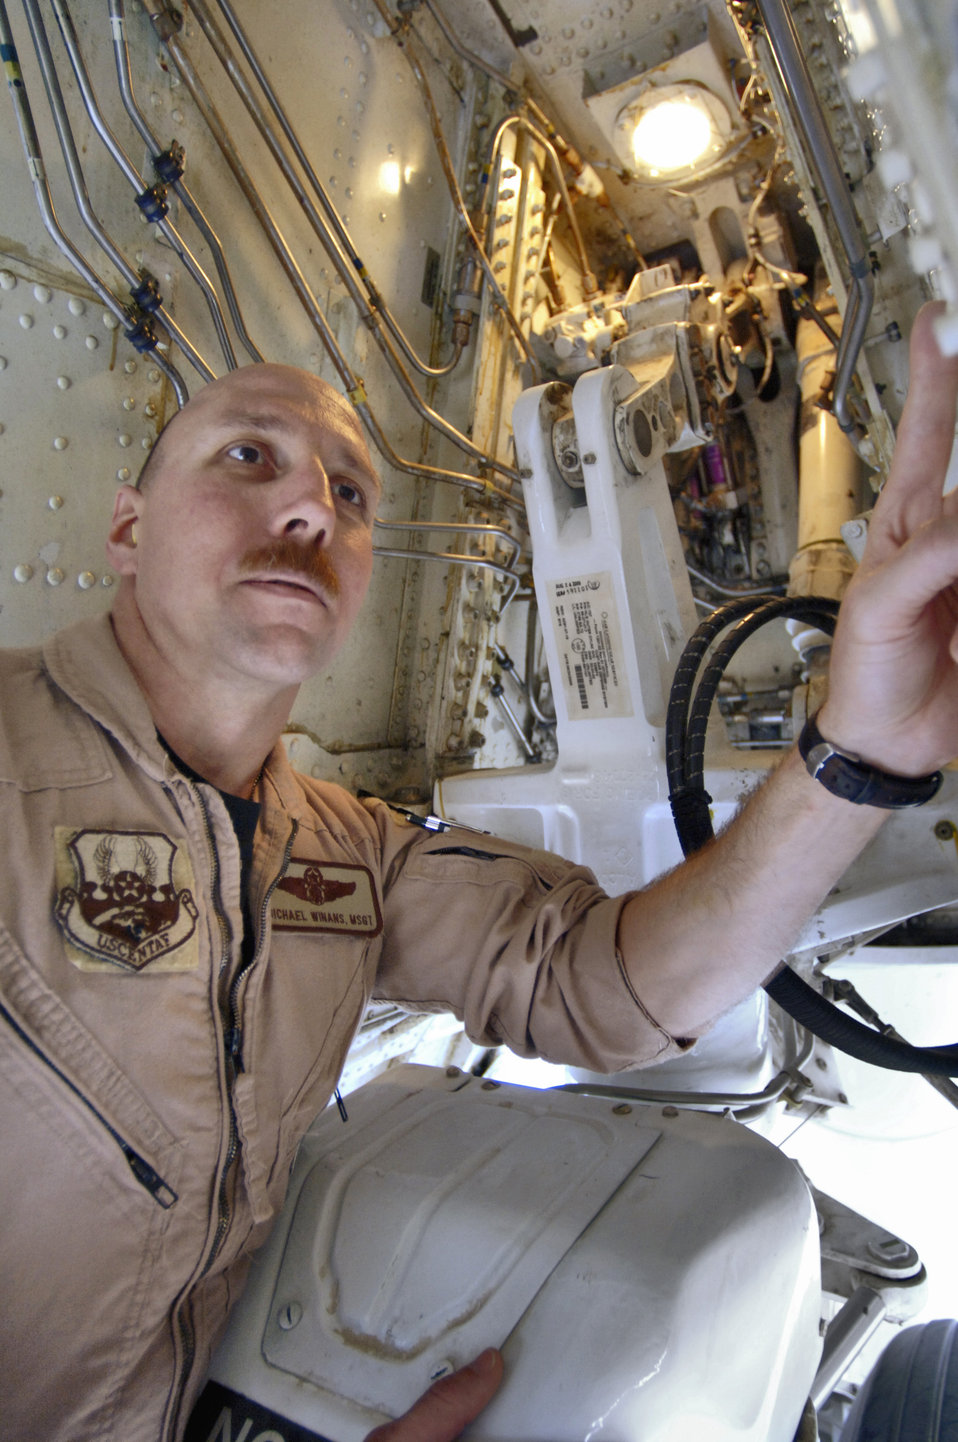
Joint STARS

SOUTHWEST ASIA (AFPN) -- Master Sgt. Michael Winans checks the nose gear wheel bearing cap during his pre-flight inspection of an E-8C Joint Surveillance and Target Attack Radar System aircraft. Joint STARS provides command and control, intelligence, surveillance and reconnaissance. The E-8C is assigned to the 12th Expeditionary Airborne Command and Control Squadron. Sergeant Winans is a flight engineer with the 116th Air Control Wing, Robins Air Force Base, Ga.